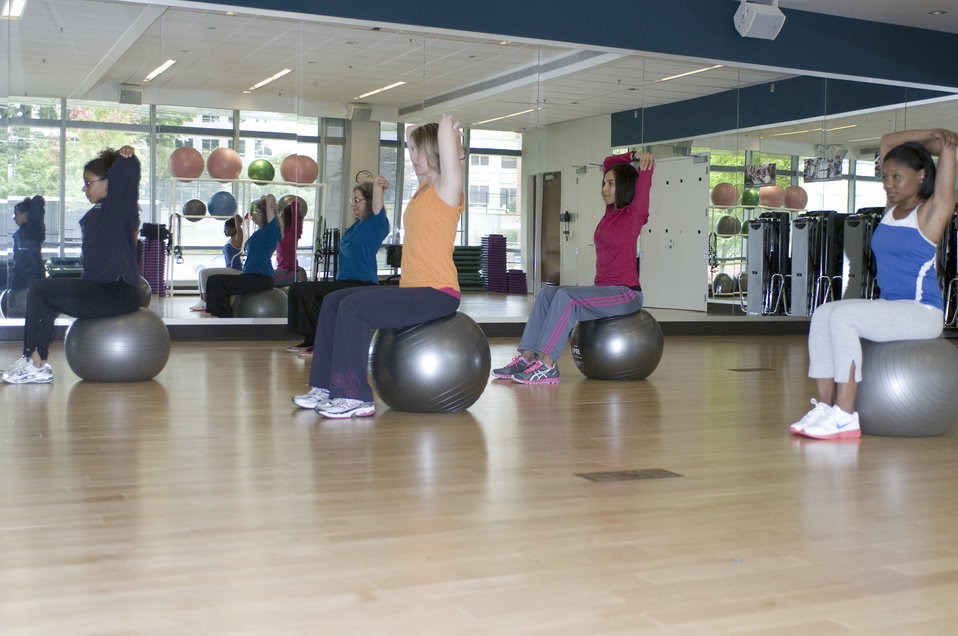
This image was captured on one of the Centers for Disease Control's (CDC) campuses, in the facility's fitness center, where a number of scheduled group classes are provided for employees' health and enjoyment. This particular class was an instructor lead aerobics exercise session, which included the use of an inflatable balance ball, upon which the class attendees were seated. While in a seated position, these female students were performing upper-body stretching exercises.